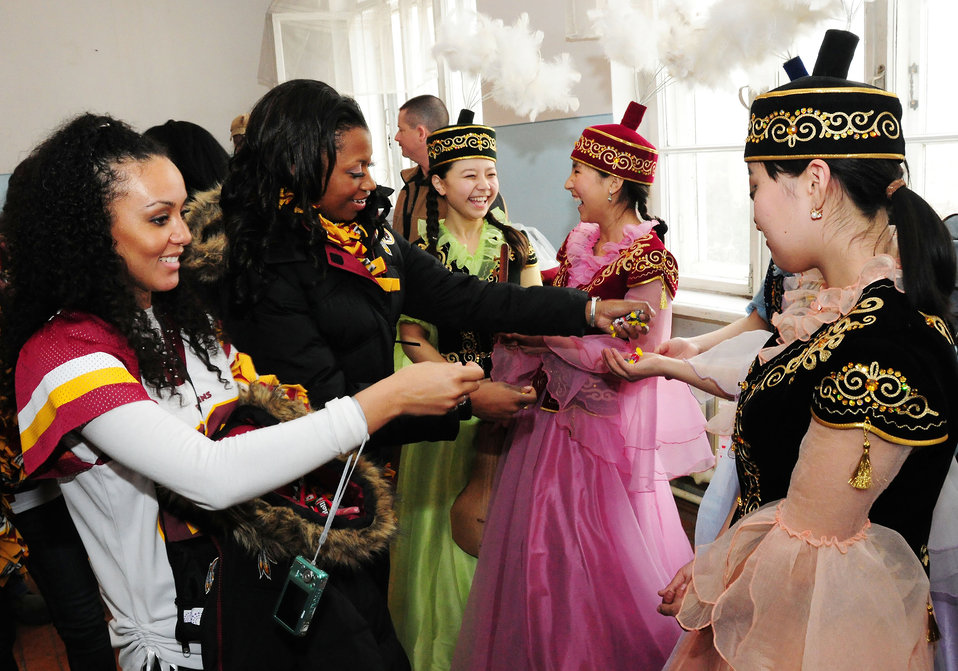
Cheers to Bishkek

The Washington Redskins cheerleaders pass out candy to students from the Abdraev Musical Boarding School Jan. 27, 2010, in Bishkek, Kyrgyzstan. The Transit Center at Manas in Kyrgyzstan is their first stop in a two-week long tour where they will perform for Airmen, Soldiers, Sailors and Marines deployed overseas.